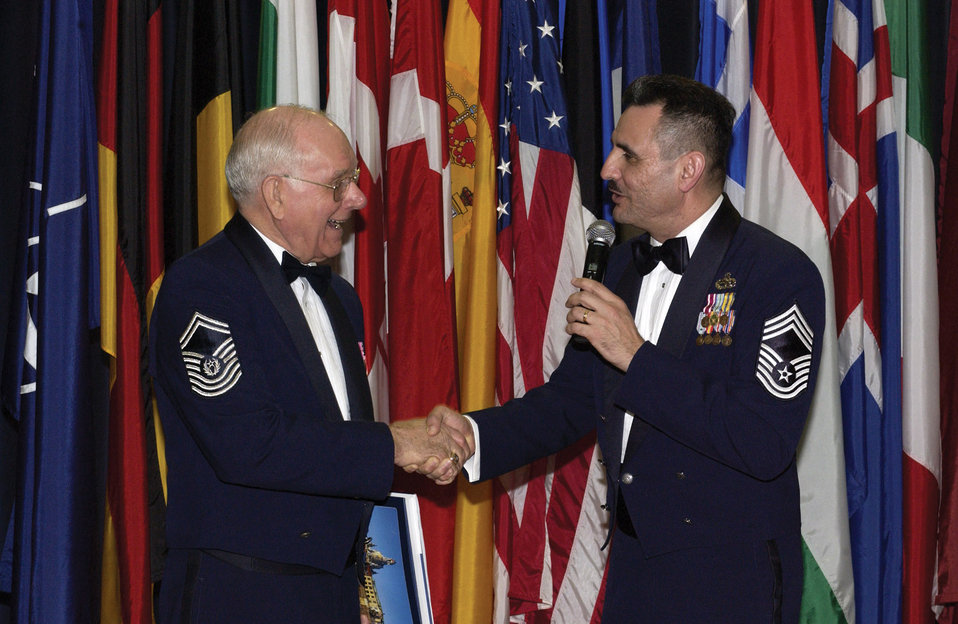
Chief Parish helps hono new chiefs

Chief Master Sgt. Marc Rodriguez, 52nd Mission Support Group, shakes hands with retired Chief Master Sergeant of the Air Force Sam Parish during a chiefs' recognition ceremony at Spangdahlem Air Base, Germany, Jan. 20. Chief Parish was the guest speaker.